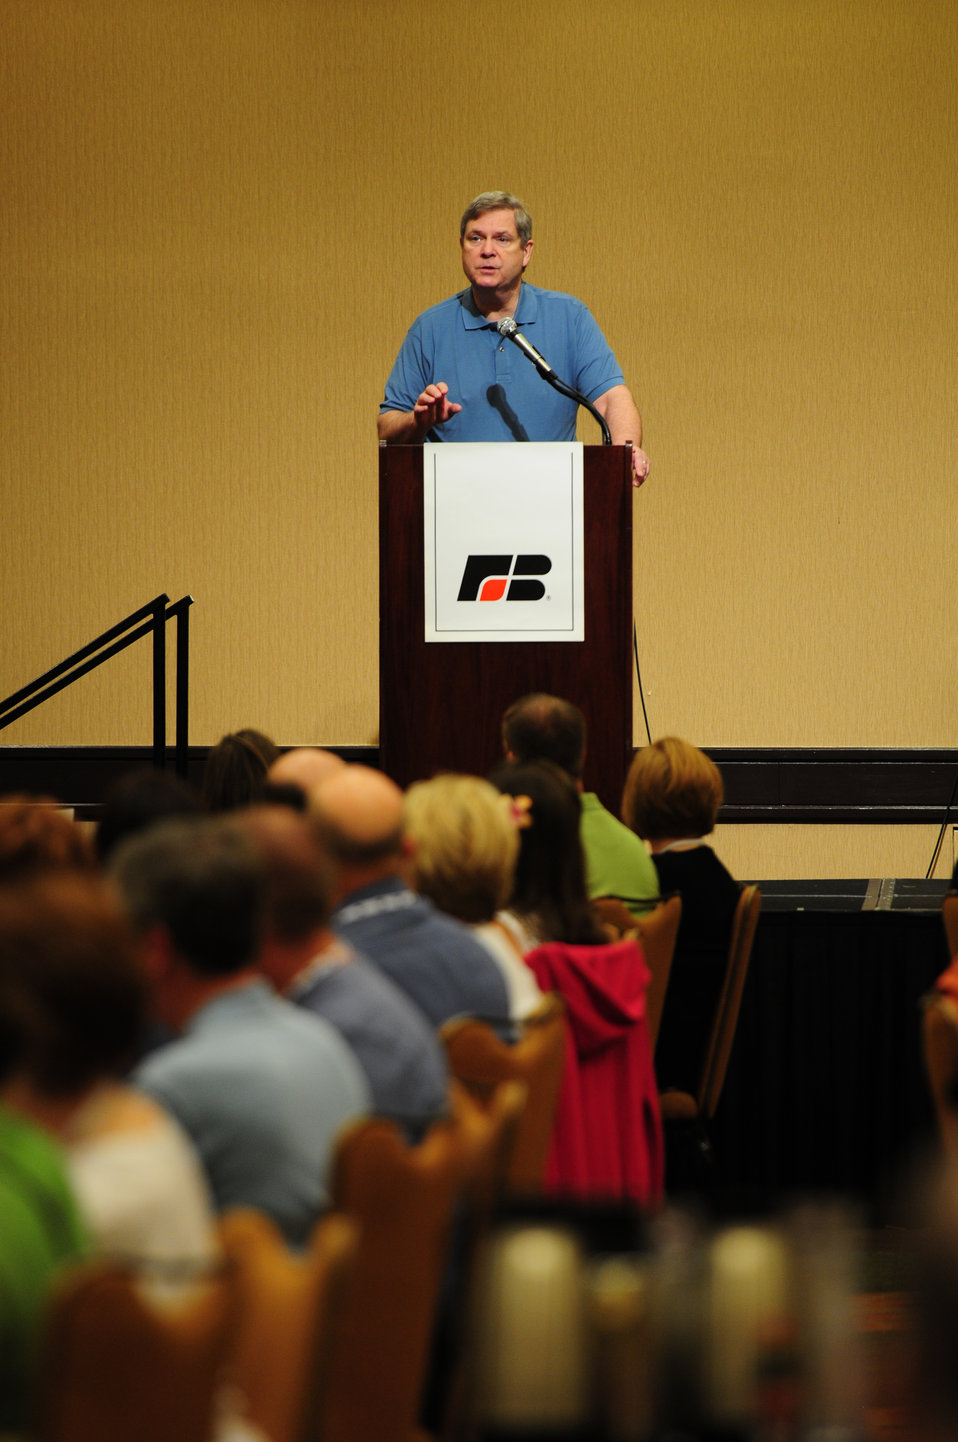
Agriculture Secretary Tom Vilsack speaks at the Iowa Farm Bureau event at the Sheridan Waikiki, in Honolulu, Hawaii, on Sunday, January 8, 2012.